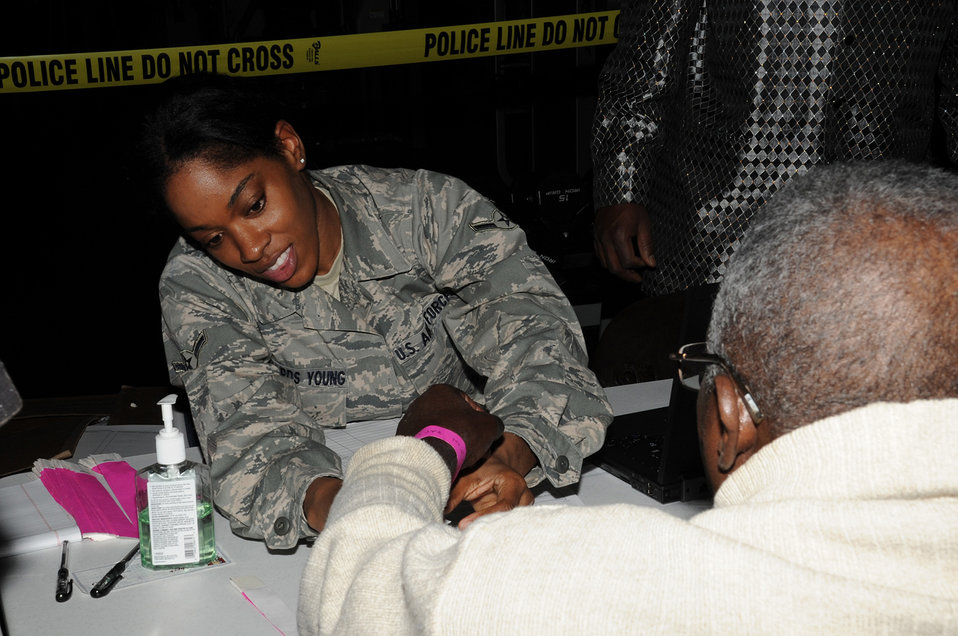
Haiti evacuees at JB MDL

JOINT BASE MCGUIRE-DIX-LAKEHURST, N.J. – Airman Zakkiyah Edwards-Young, a Reservist with the 35th Aerial Port Squadron, puts a wrist-band on an evacuee when signing him in to the McGuire Fitness Center shelter Saturday. The shelter is equipped to provide food, medical care, clothes, and phones to communicate with their family and arrange transportation home.